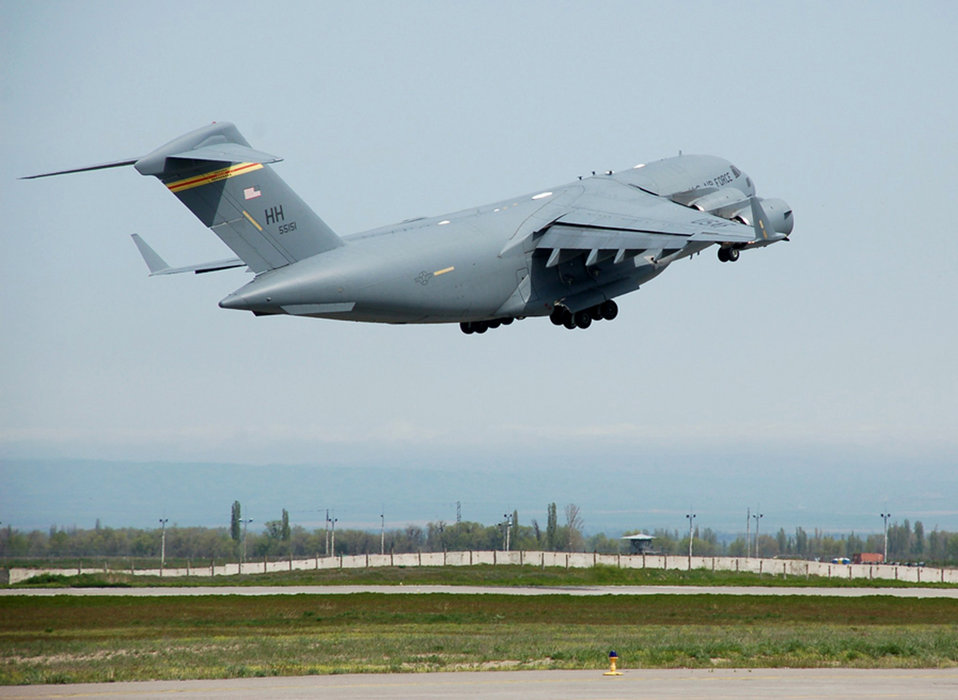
C-17 stage crew at Manas ramp up support for OEF

A C-17 Globemaster III from the 535th Airlift Squadron at Hickam Air Force Base, Hawaii, takes off from Manas Air Base, Kyrgyzstan, April 18 with a load of cargo destined for Afghanistan. For the past five weeks, three C-17 aircrews from Pacific Air Forces have been flying three flights nearly every day in order to deliver needed supplies for the buildup of various bases supporting Operation Enduring Freedom.